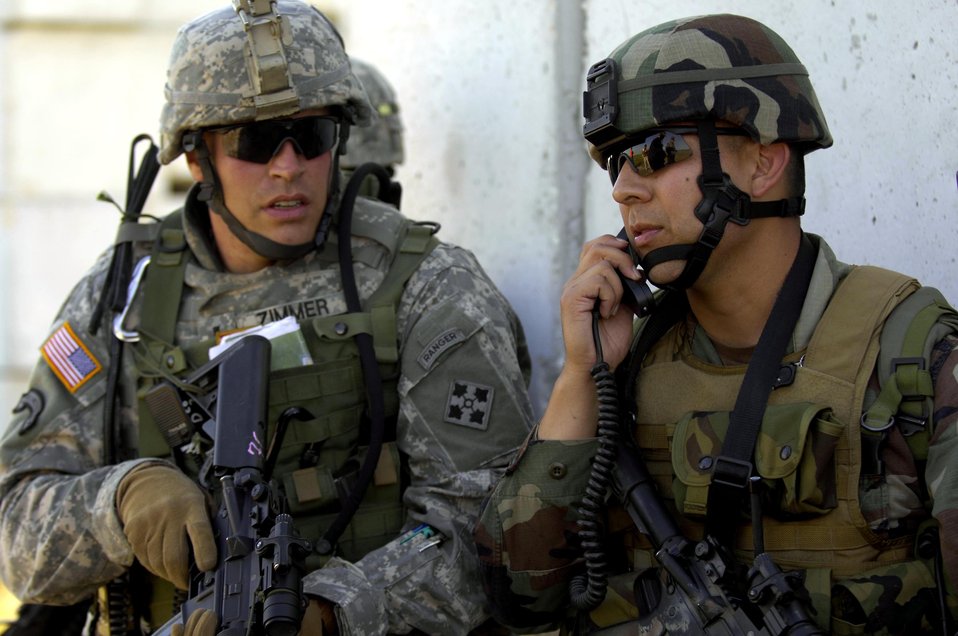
Atlantic Strike V begins in Avon Park

Staff Sgt. Mike Warner relays grid coordinates to an A-10 Thunderbolt II pilot in the air during Atlantic Strike V April 16 at Avon Park, Fla. Atlantic Strike is a joint forces training event involving joint terminal attack controllers from the Army, Air Force and Marines and is held semi-annually at the Avon Park Air Ground Training Complex. Sergeant Warner is a joint terminal attack controller assigned to the 274th Air Support Operations Squadron in Syracuse, N.Y.